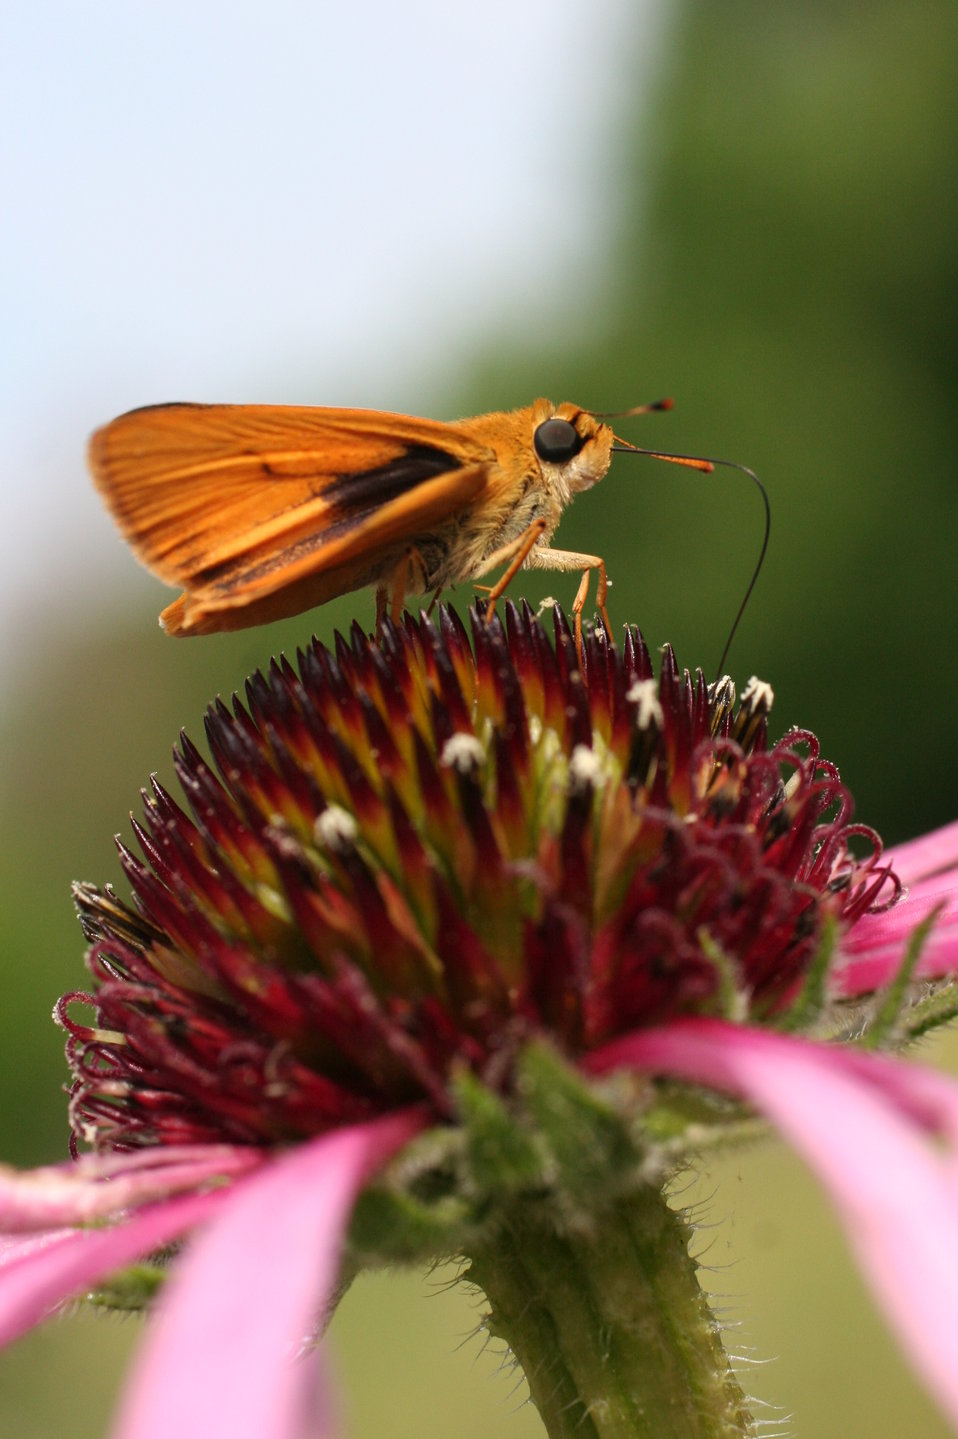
Skipper butterfly

Pale purple coneflower with skipper butterfly.